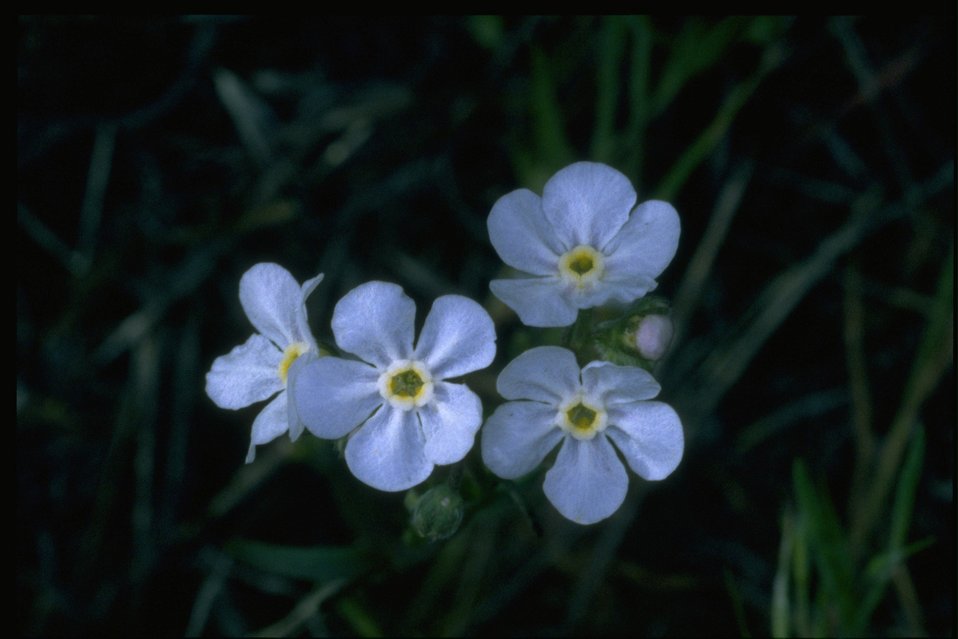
Closeup of Phlox wildflower.